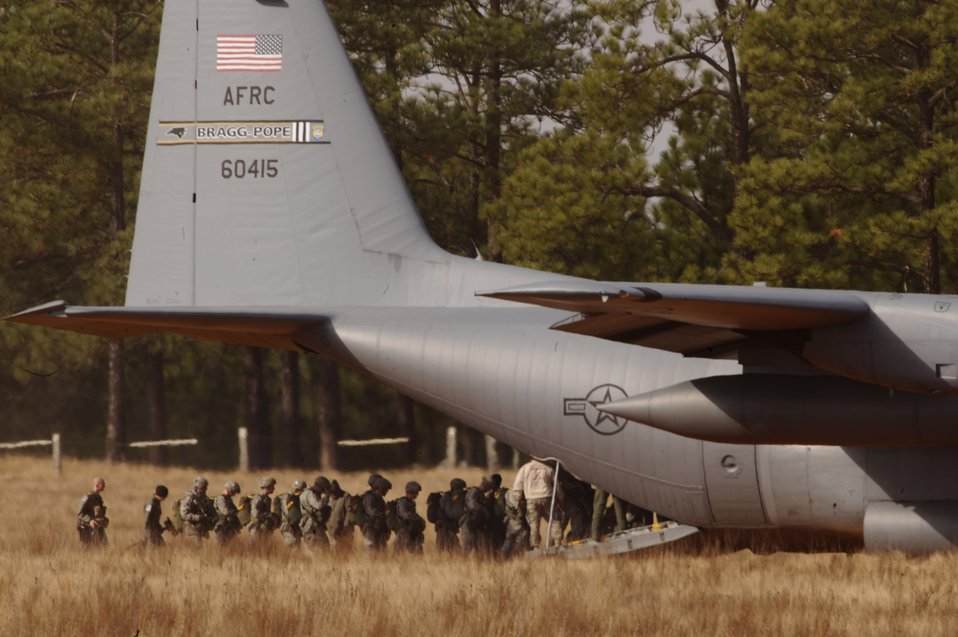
Operation Toy Drop

Army Soldiers from the 82nd Airborne Division load onto a C-130 Hercules before they parachute onto Drop Zone Sicily during Operation Toy Drop Dec. 6 at Fort Bragg, N.C. Operation Toy Drop is an annual Airborne jump at Fort Bragg in its 11th year hosted by the Army Civil Affairs and Psychological Operations Command (Airborne), and supported by Fort Bragg's XVIII Airborne Corps and the Air Force Reserve Command's 440th Airlift Wing that gives Soldiers and Airmen the opportunity to help local families in need over the holidays while boosting morale and incorporating valuable training. More than 3,000 Soldiers donated a toy for a lottery ticket and the chance to jump under a foreign jumpmaster, earning them their foreign jump wings. This year, German and Irish jumpmasters will be issuing the commands from C-130 Hercules aircraft during the operation.